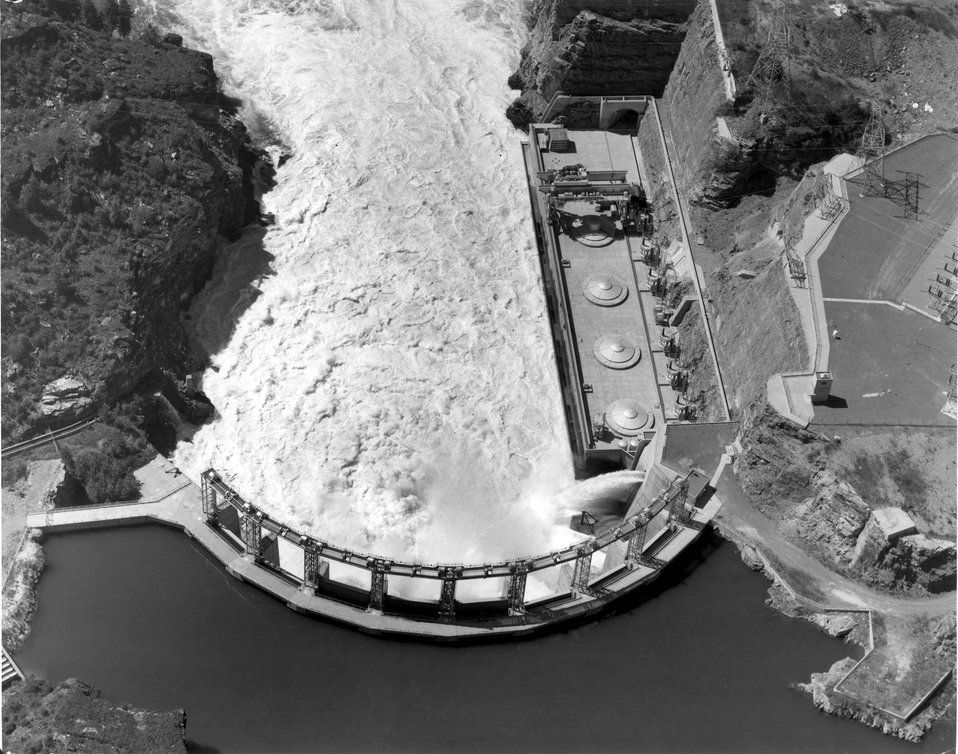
Cabinet Gorge Dam in Idaho. c. undated